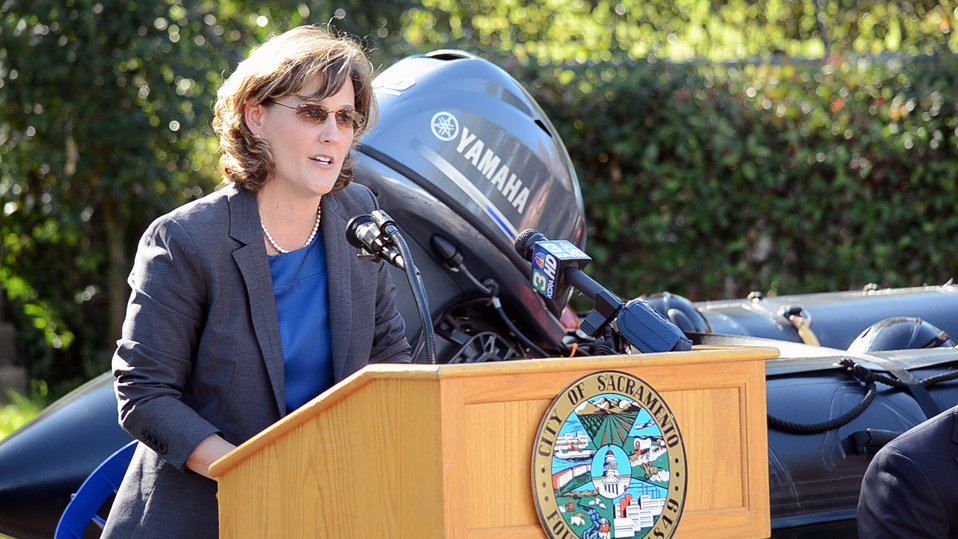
Corps supports Sacramento high water mark event

The U.S. Army Corps of Engineers Sacramento District’s new civilian deputy district engineer, Tambour Eller, speaks at the unveiling of a new high water mark sign at Garcia Bend Park in Sacramento, Calif., Nov. 8, 2013. The sign marks the highest known elevation of the Sacramento River, and how high floodwater would’ve been in the park if the levee had failed. The event was hosted by the cities of Sacramento and Roseville to increase flood awareness and preparedness in the region.